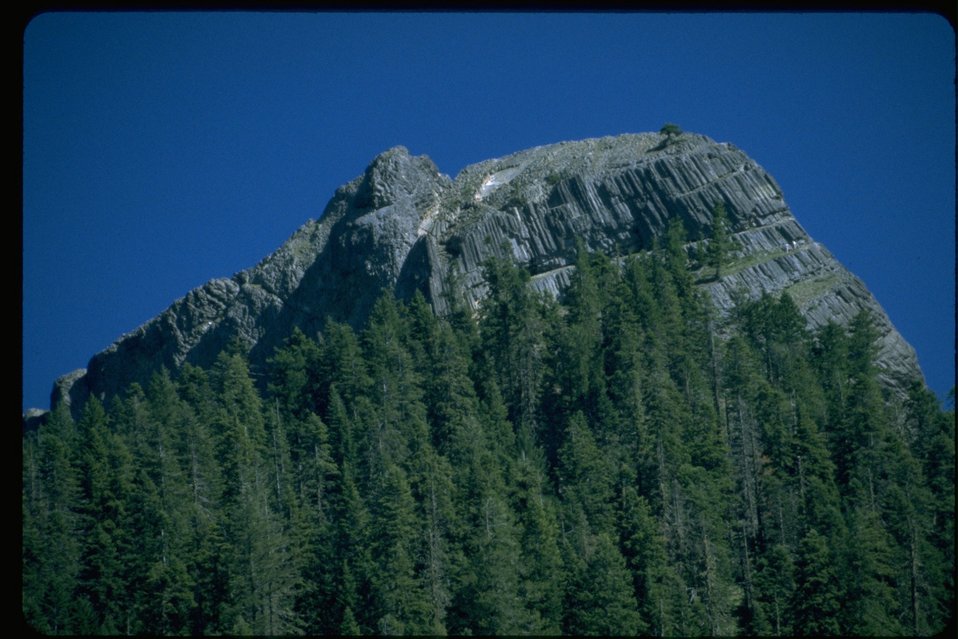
Pilot Rock Cascade-Siskiyou National Monument (SCNM).